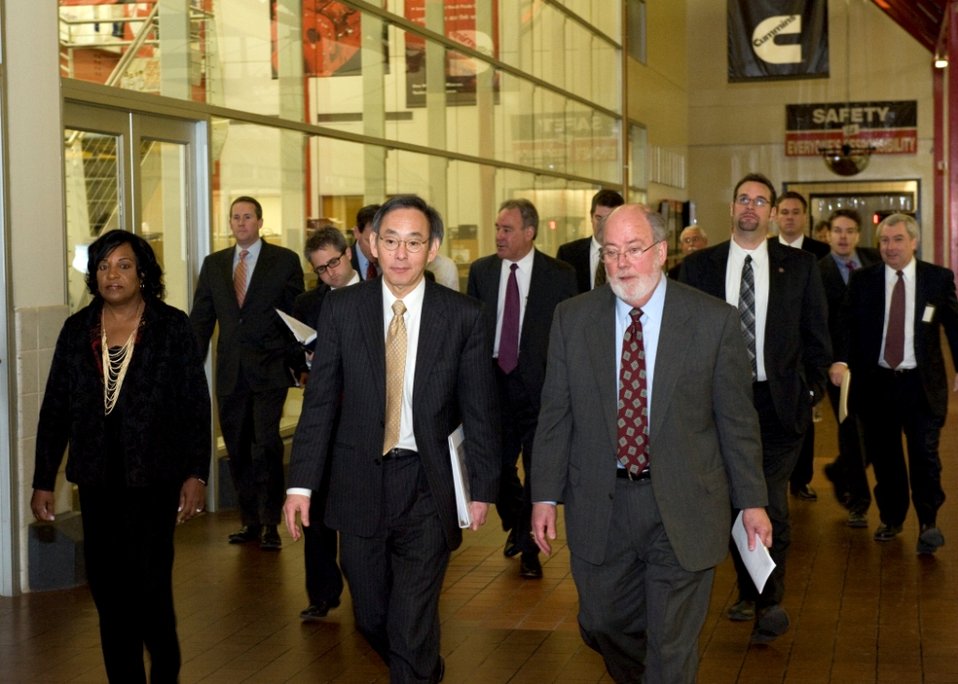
DOE event - Chu 3